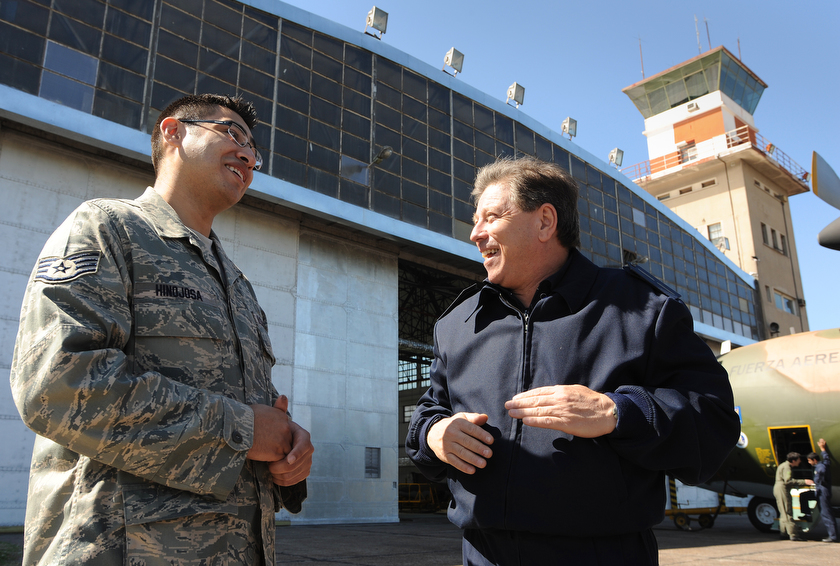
Maintainers partner to exchange new practices

Staff Sgt. David Hinojosa (left) shares stories Oct. 30 with former student (right) Argentinean air force Senior Master Sgt. Jose Minichiello, training superintendent for the 1st Air Brigade, Technical Group D. The exchange between the two countries' Airmen is part of Operation Southern Partner, which brings U.S. Air Force Airmen to South America to have a two-week subject matter exchange emphasizing partnership, cooperation and sharing of information with partner nation Air Forces in Latin America. Sergeant Hinojosa is an aircraft structural maintenance instructor for the Inter-American Air Force Academy at Lackland Air Force Base, Texas.